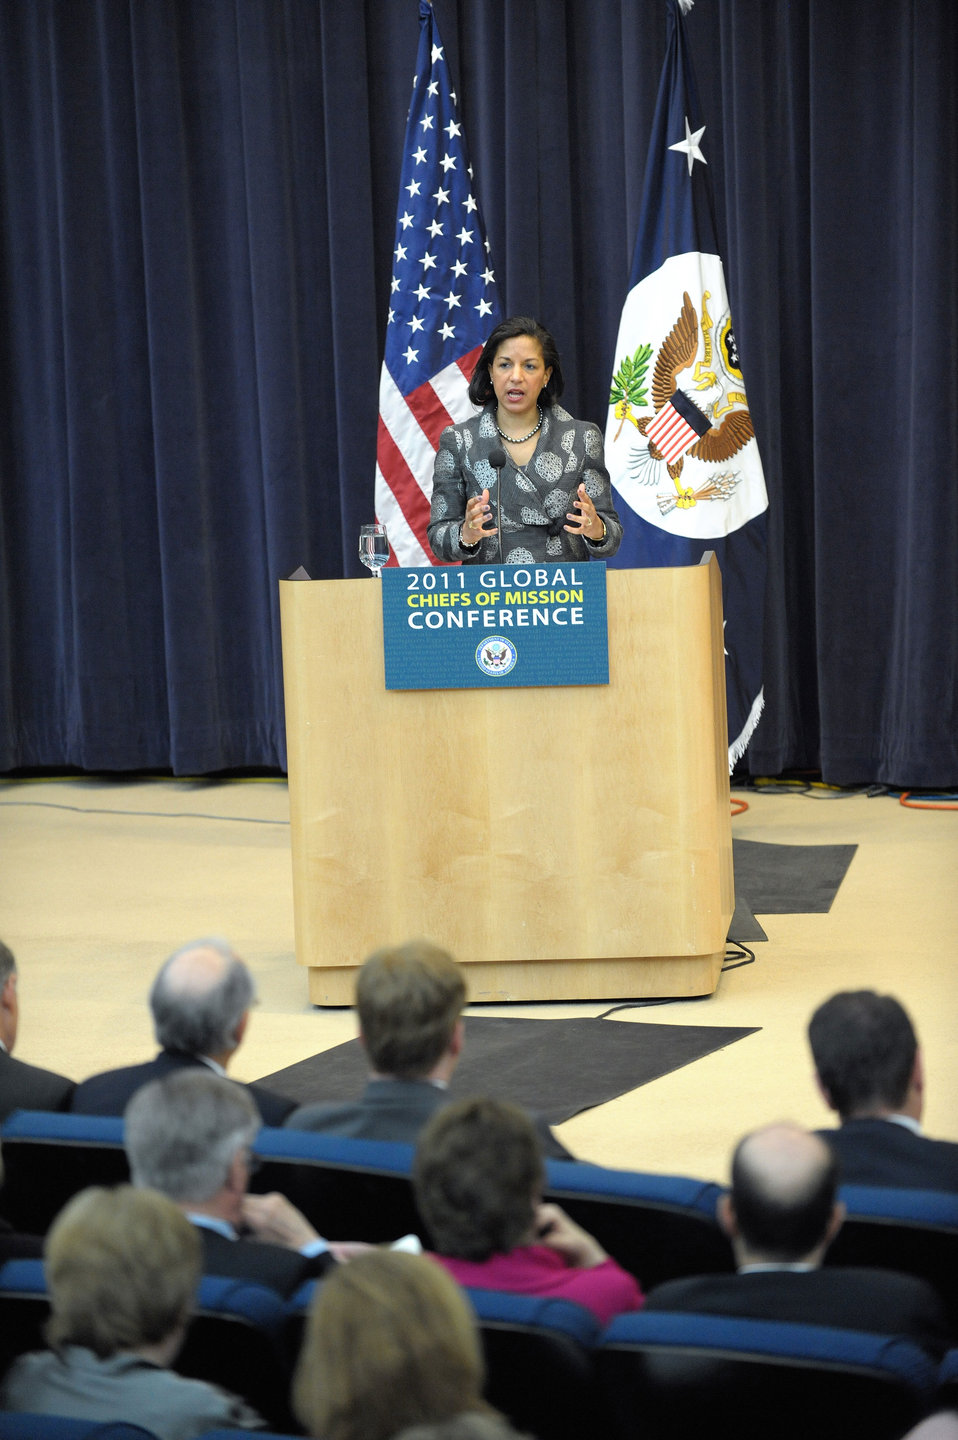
Ambassador Rice Delivers Remarks

U.S. Permanent Representative to the United Nations Susan Rice delivers remarks at the 2011 Global Chiefs of Mission Conference at the U.S. Department of State in Washington, D.C., on February 2, 2011.